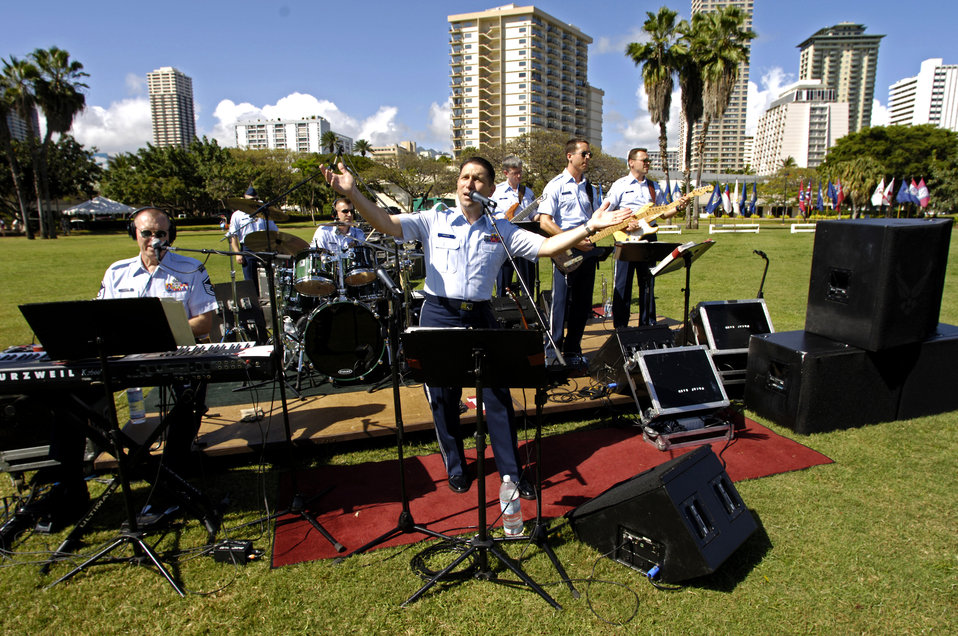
Twilight Tattoo

The Air Force Band of the Pacific performs during the 10th Annual Twilight Tattoo at Fort DeRussy, Hawaii, on Saturday, May 13, 2006. The event features bands from all the services.